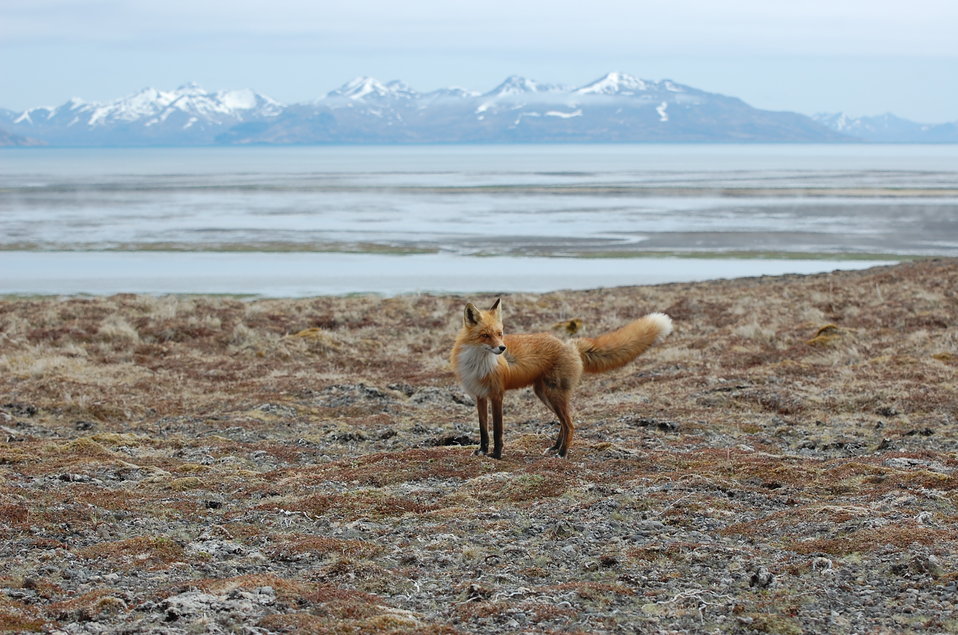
Red Fox at Kinzarof Lagoon

Kinzarof Lagoon, Izembek National Wildlife Refuge